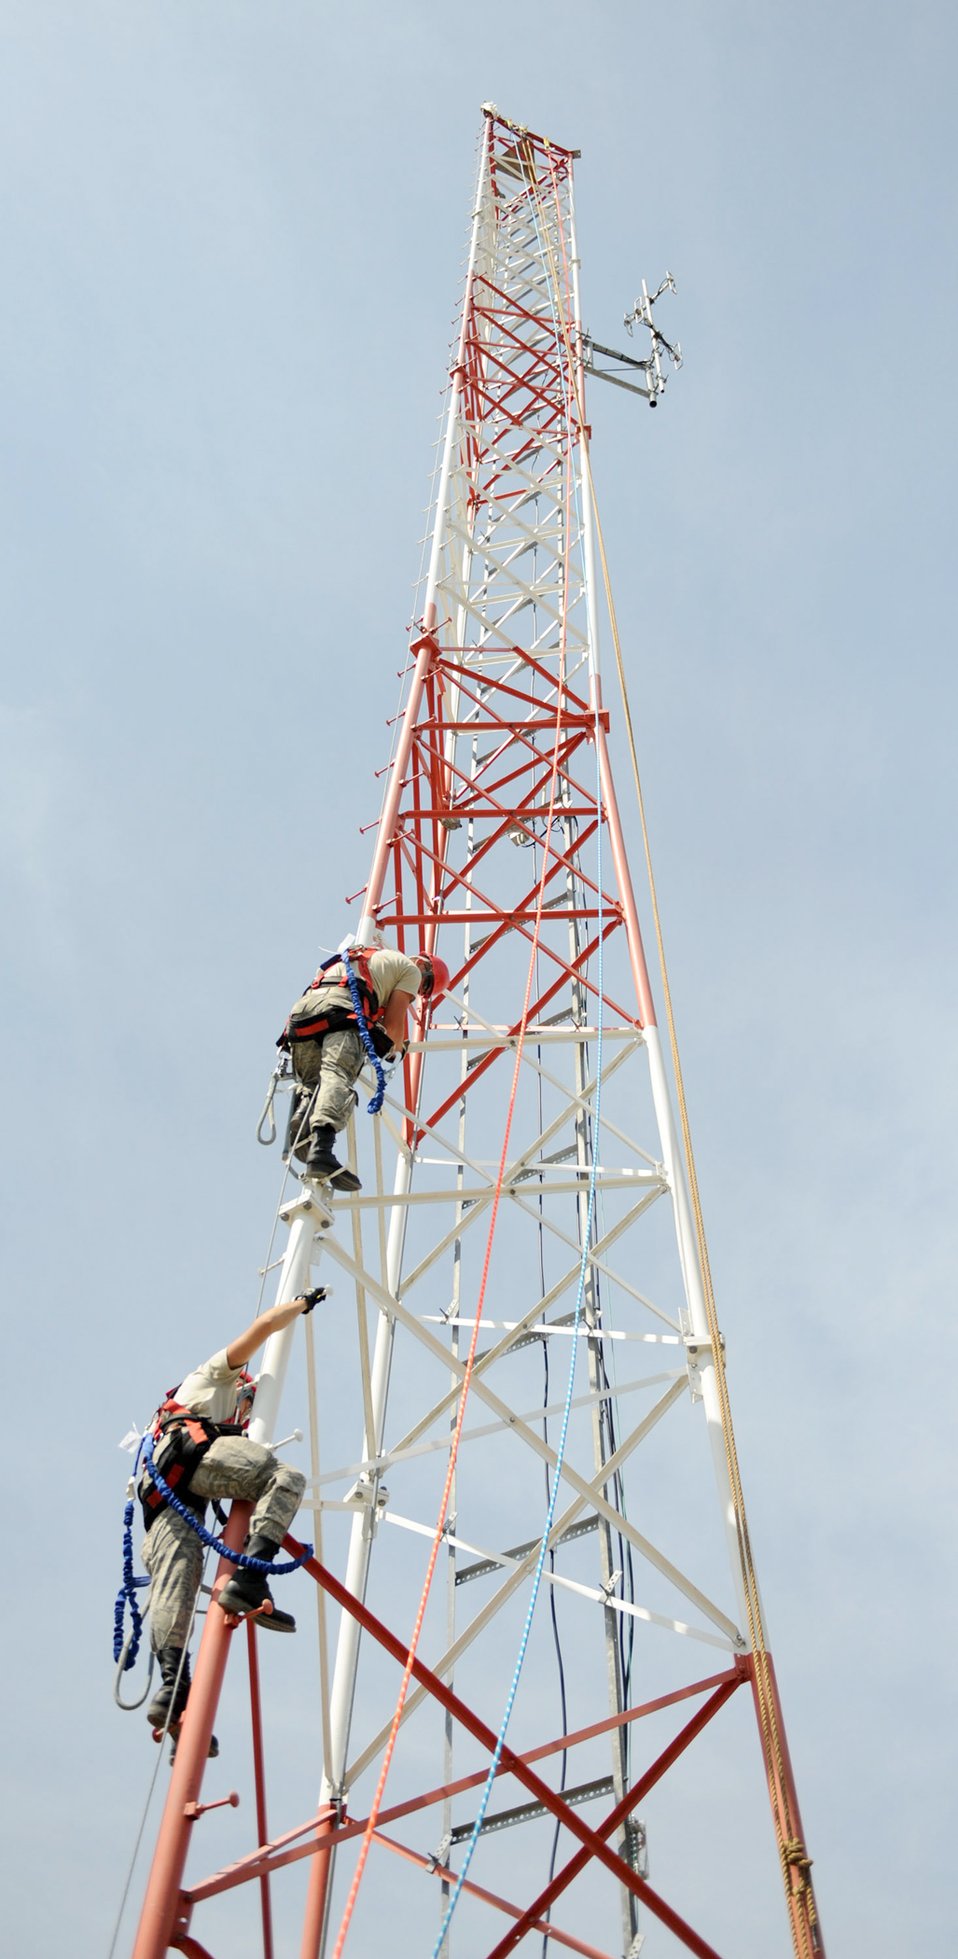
Upgrading communications tower

Airmen make their way up the communications tower July 22, 2010, at F.S. Gabreski Air National Guard Base in Westhampton Beach, N.Y., to improve the grounding system and install a lightning mast. They are assigned to the New York Air National Guard's 213th Engineering Installation Squadron at nearby Stewart ANGB in Newburgh.